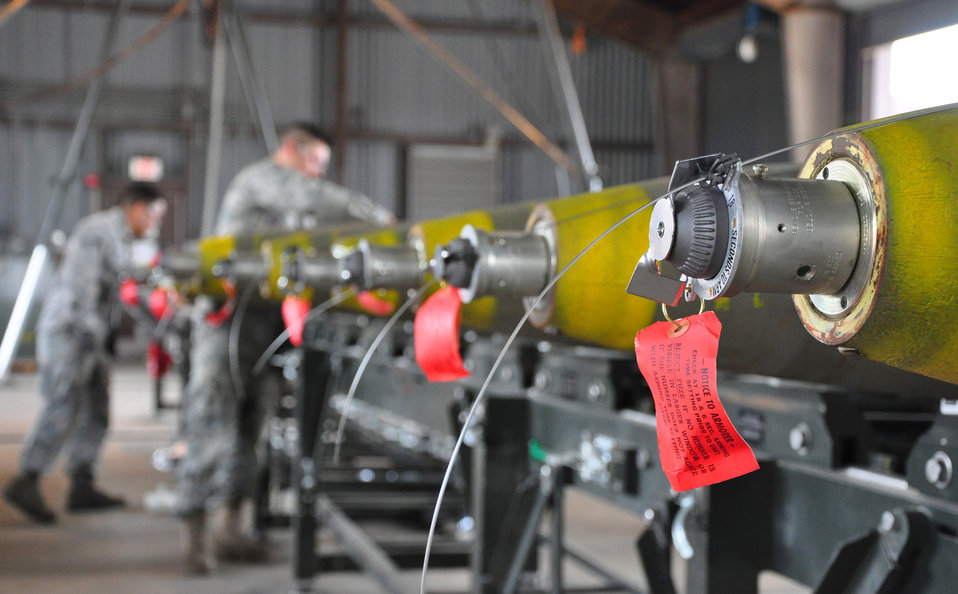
Loading munitions

Airmen at Osan Air Base, South Korea, build bombs May 3, 2011.